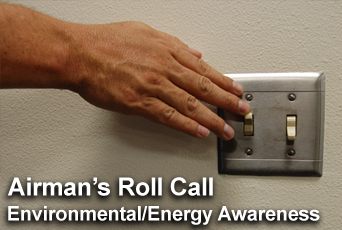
Airman's Roll Call -- Energy Awareness

This week's Airman's Roll Call focuses on environmental and energy awareness.